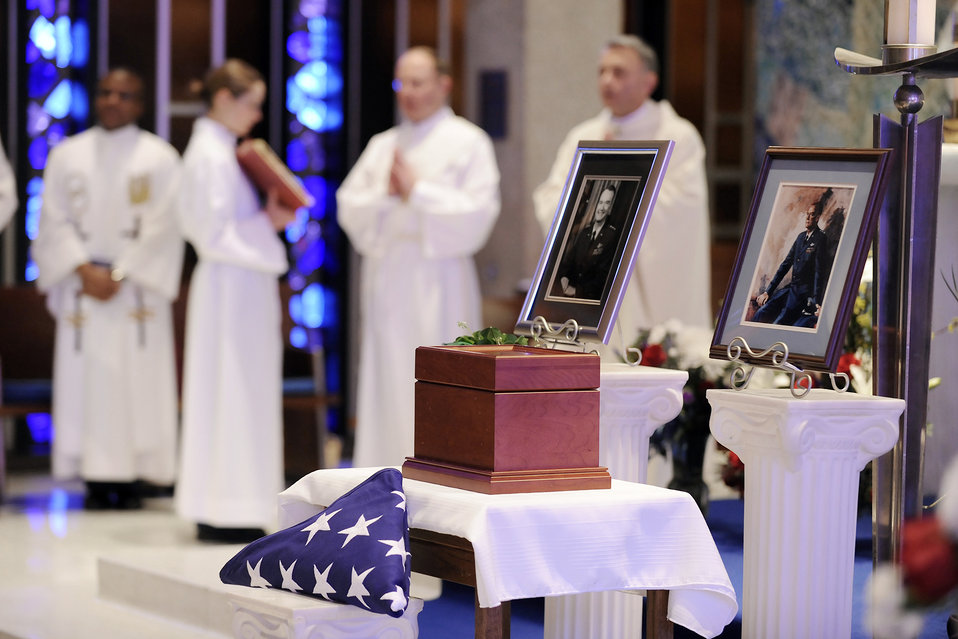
General Clark honored with service

A funeral mass was held at the U.S. Air Force Academy's Cadet Chapel for Lt. Gen. Albert P. Clark who died March 8, 2010, in Colorado Springs, Colo. General Clark, who was the Academy's sixth superintendent from Aug. 1, 1970 to July 31, 1974, was a 1936 graduate of West Point and went on to a flying career after graduation. He spent 33 months as a prisoner of war after getting shot down flying a British Spitfire over Abbeville, France, in July 1942. General Clark was buried in the Air Force Academy Cemetery March 17.